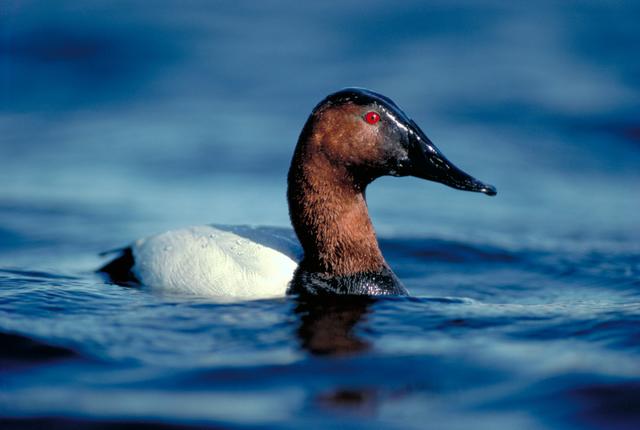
Canvasback